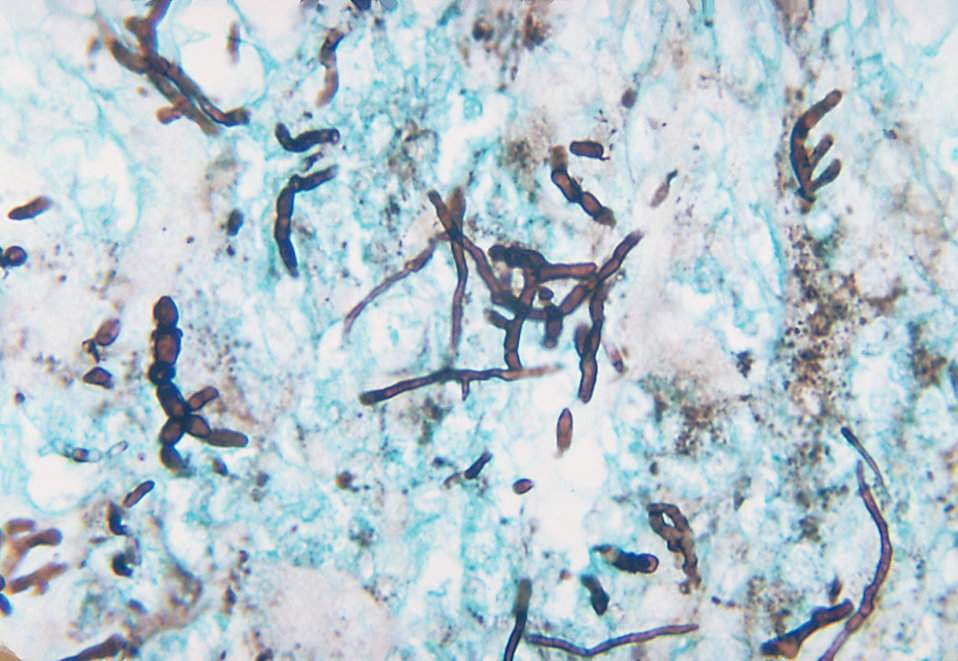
Note the histopathologic changes associated with phaeohyphomycosis due to P. parasitica using methenamine silver stain.